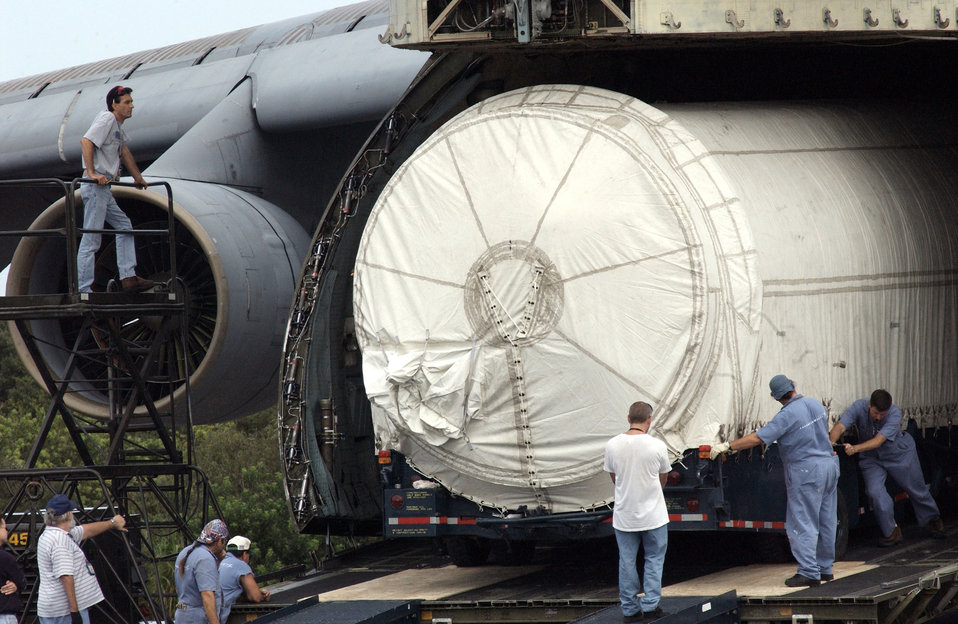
Titan's final flight

CAPE CANAVERAL AIR FORCE STATION, Fla. -- Lockheed Martin employees and airmen of the 3rd Space Launch Squadron unloaded a Titan IVB rocket from a C-5 Galaxy on Oct. 4. The rocket will be the last to launch from here in late 2004.